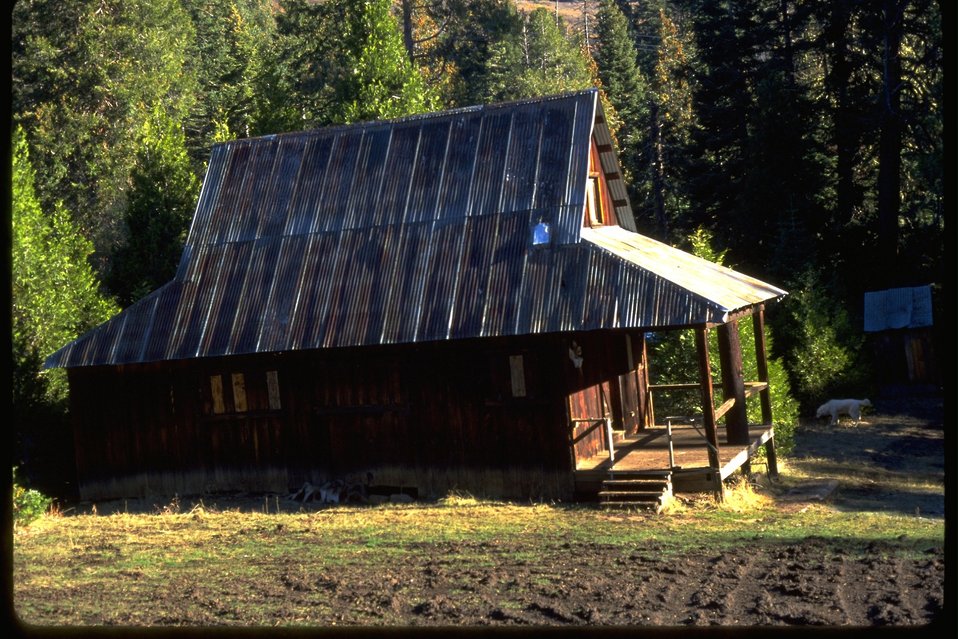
PPL Line shade at power line at LeRoy Burkhart's retirement home.